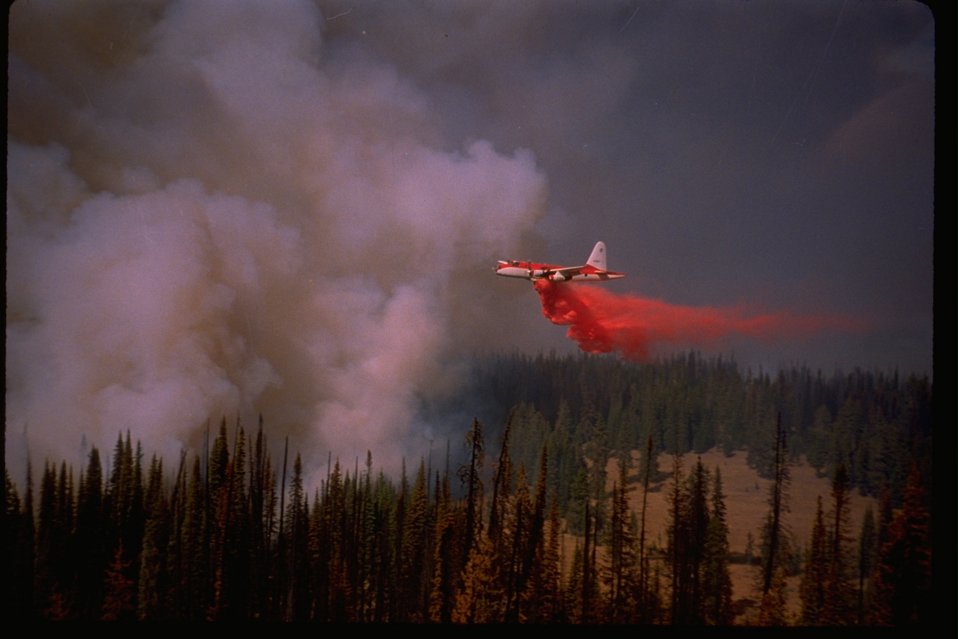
Airtanker drop on fire.